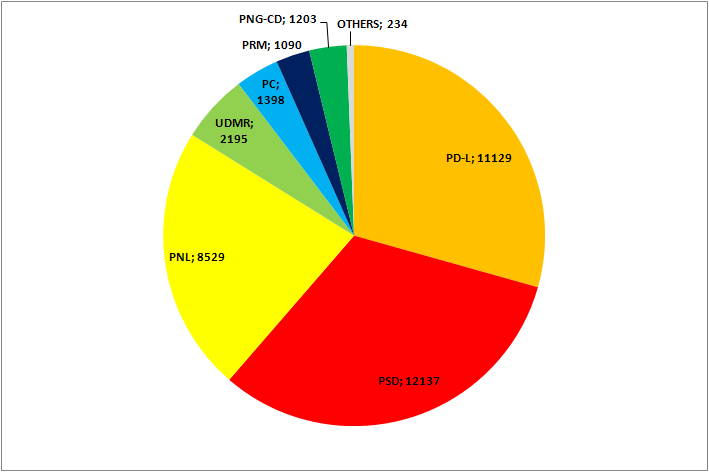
The distribution of the 37,915 Local Council seats